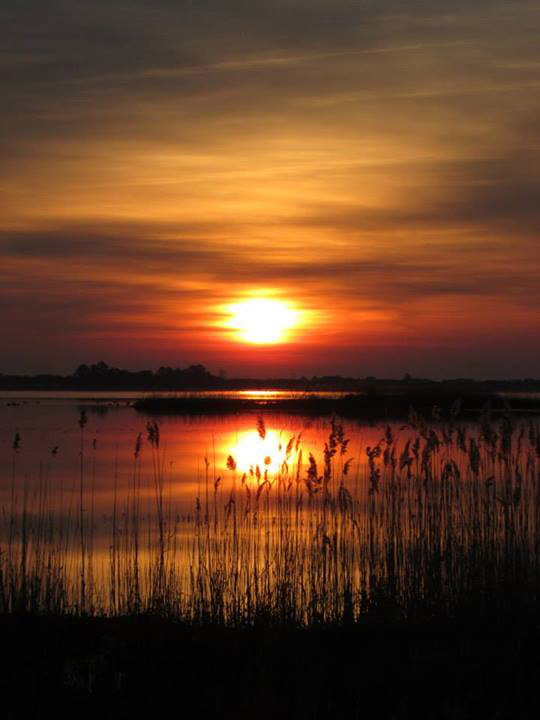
Photo of the Week - Happy 111th Birthday to the National Wildlife Refuge System

Photo of the Week 3/10/14

Clean water. Clean air. Unusual and abundant wildlife. World-class recreation. The National Wildlife Refuge System provides and protects it all on 150 million acres of land and water from the Caribbean to the Pacific, Maine to Alaska. There is at least one national wildlife refuge in every state. This week, the Refuge System celebrates its 111th birthday!